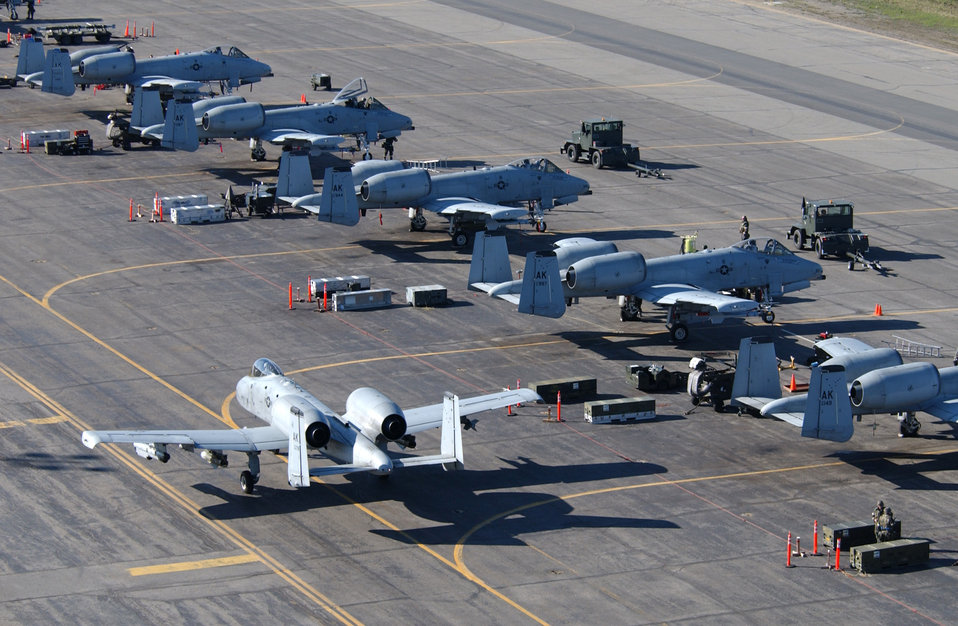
Lotsa bolts

EIELSON AIR FORCE BASE, Alaska -- A-10 Thunderbolt IIs are prepared for a training mission during an operational readiness exercise here May 24. The A-10s are assigned to the 355th Fighter Squadron.